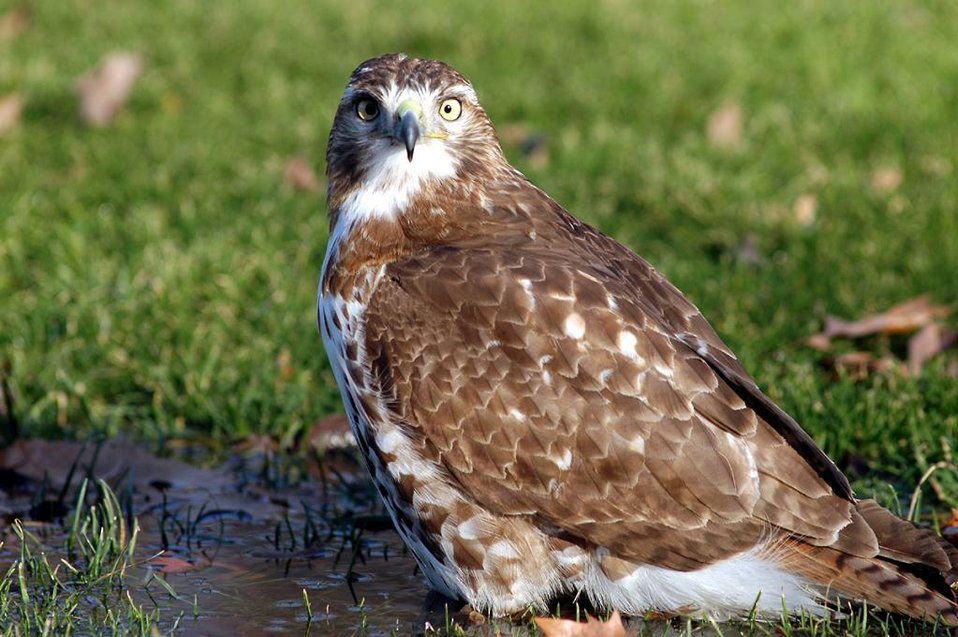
Uploaded by Kokyat Choong

Taken in Central Park, Manhattan, New York

Red Tail Hawk in Central Park, Manhattan, New York